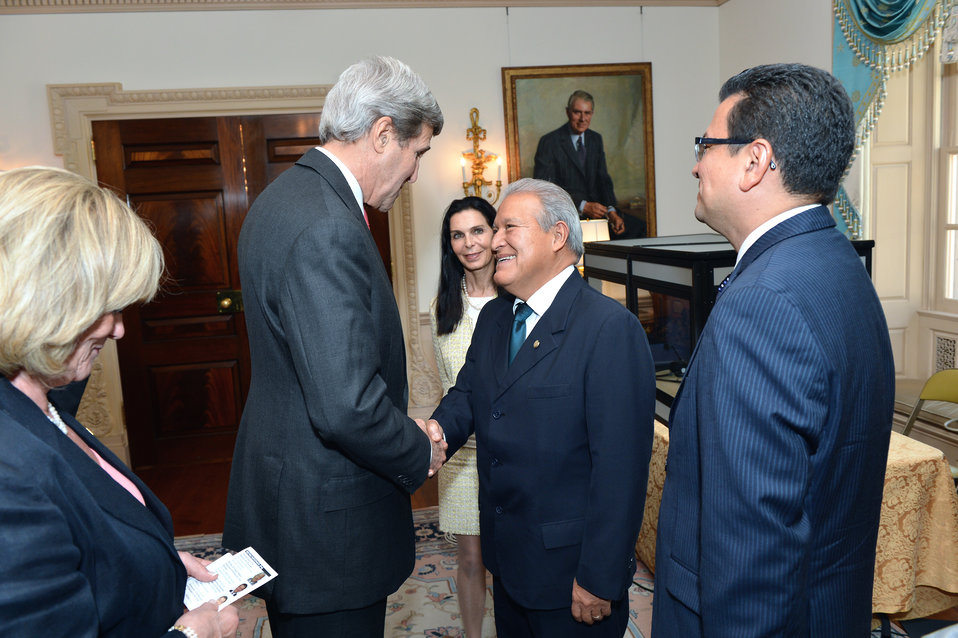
Secretary Kerry Meets With El Salvadorian President-Elect

U.S. Secretary of State John Kerry greets El Salvadoran President-Elect Salvador Sanchez Ceren during their meeting at the U.S. Department of State in Washington, DC on May 12, 2014.